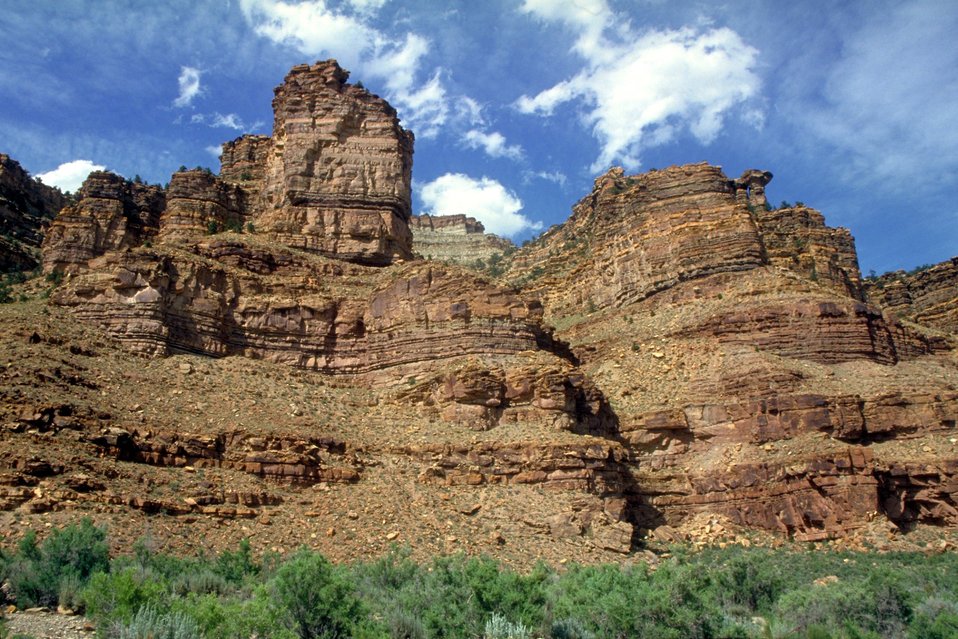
Nine-Mile Canyon near Price, Utah.